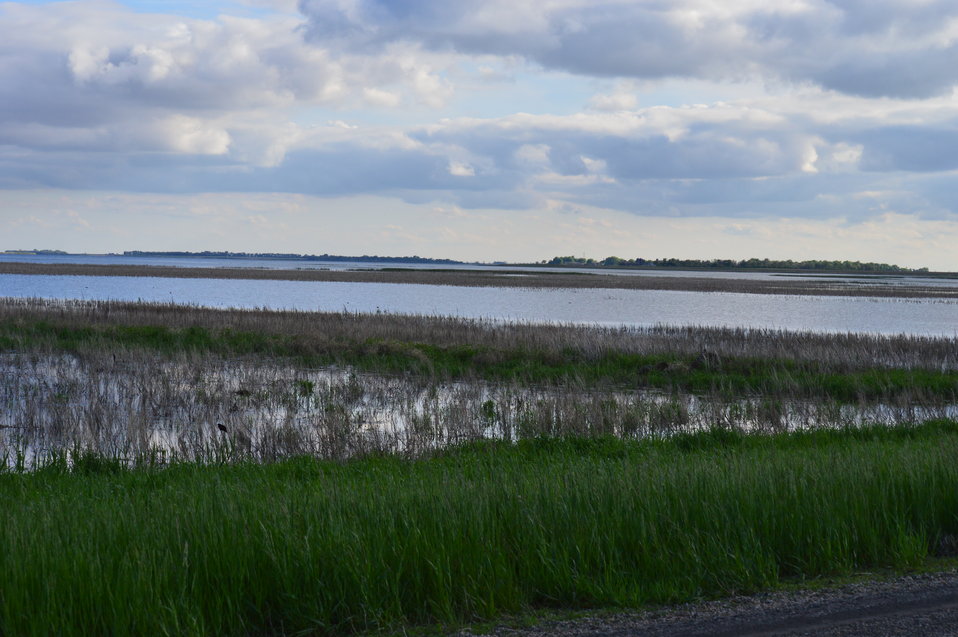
Sand Lake

Scenery and wildlife at Sand Lake National Wildlife Refuge in South Dakota